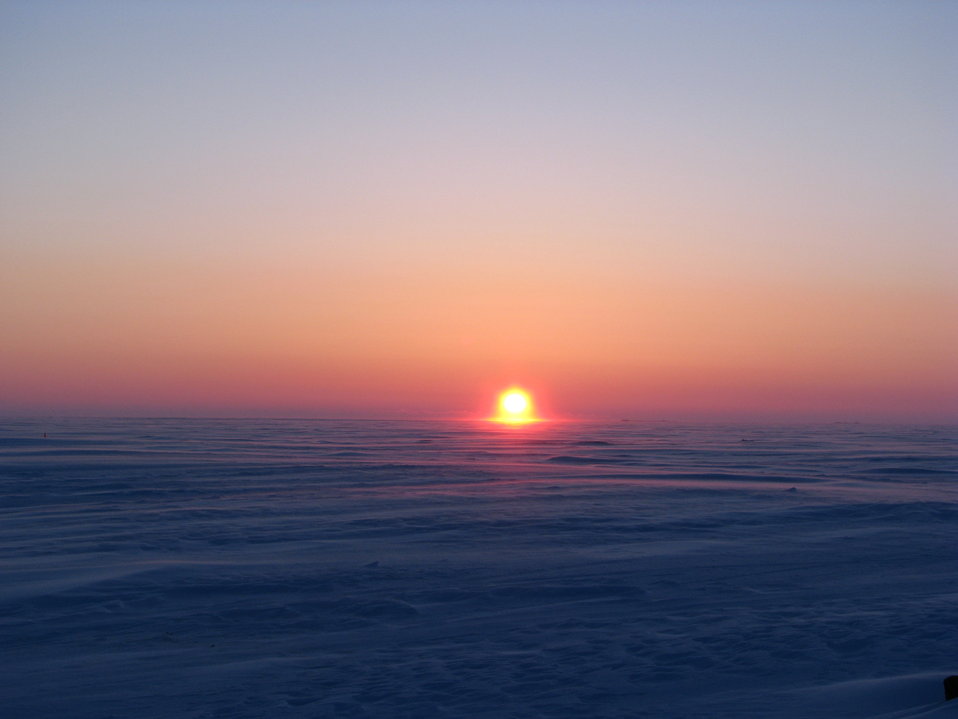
Sunset pre-breakup

There are times when camps will set up pre-breakup. Even though everything is still frozen and it can be quite cold at least the sunsets are spectacular.

USFWS Yukon Delta NWR